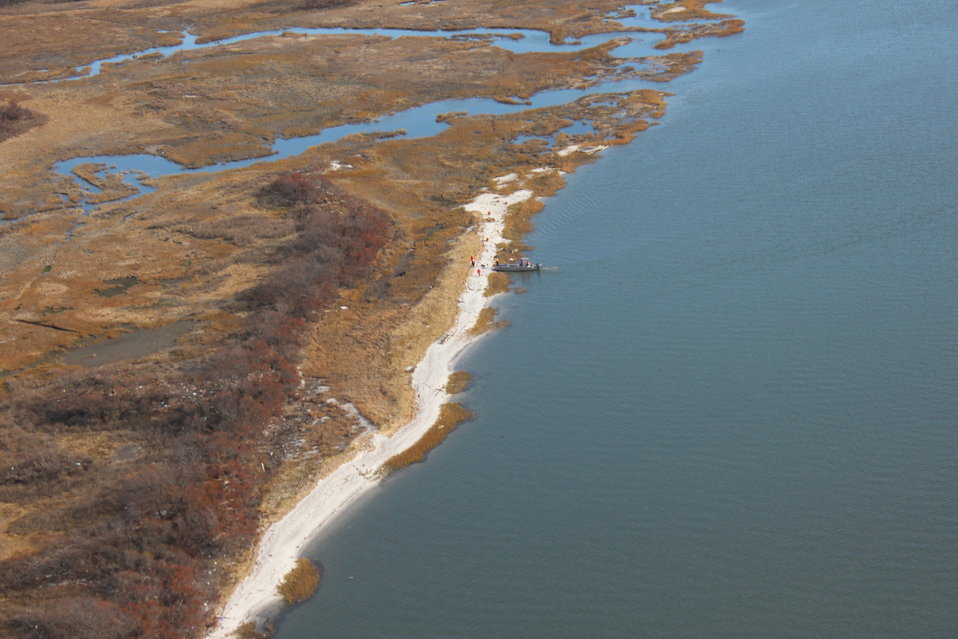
December 6, 2012 Bird’s-eye View of EPA Boat Ops

Previous flyovers helped to identify the need for boat operations. The visibility at low altitudes helped response teams identify areas of debris that had washed into wetlands and outlying beaches inaccessible by car.

Additional photos of items collected by our boat crews can be seen here: www.flickr.com/photos/usepagov/8294687240/in/set-72157632...